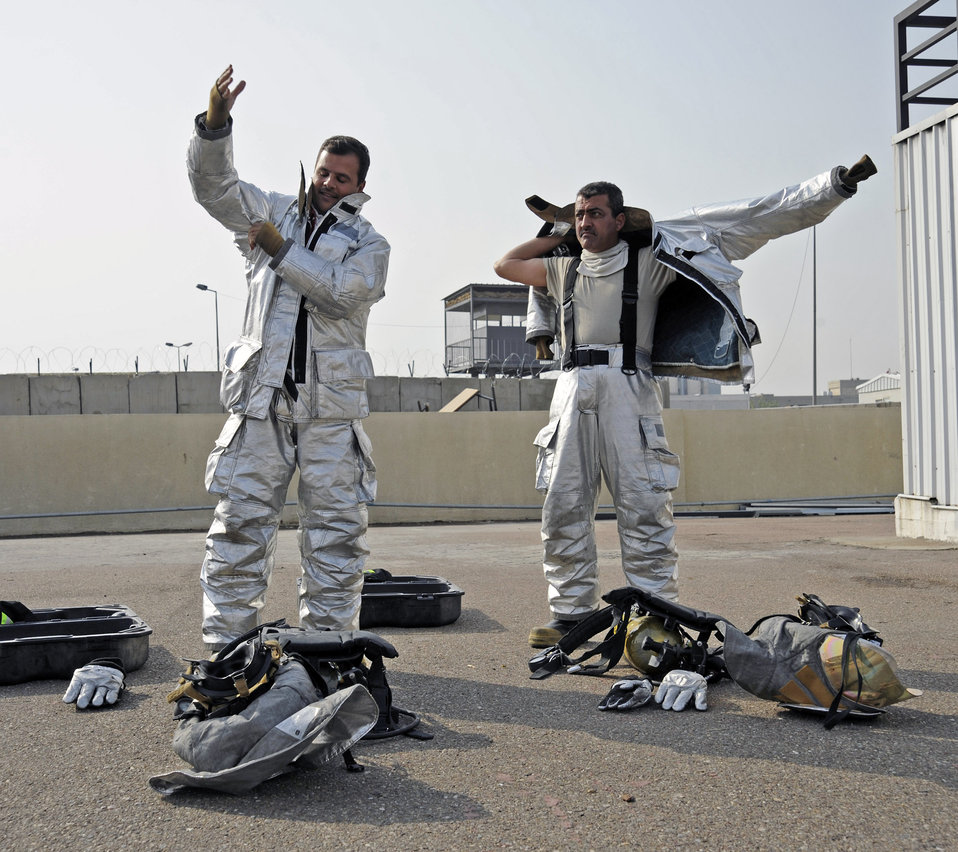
AF firefighters relocate, expand Iraqi fire training course

Iraqi firefighters don their personal protective equipment before participating in a live fire exercise in Baghdad, Iraq, Dec. 24. The firefighters are part of a 60-day firefighter apprentice course.